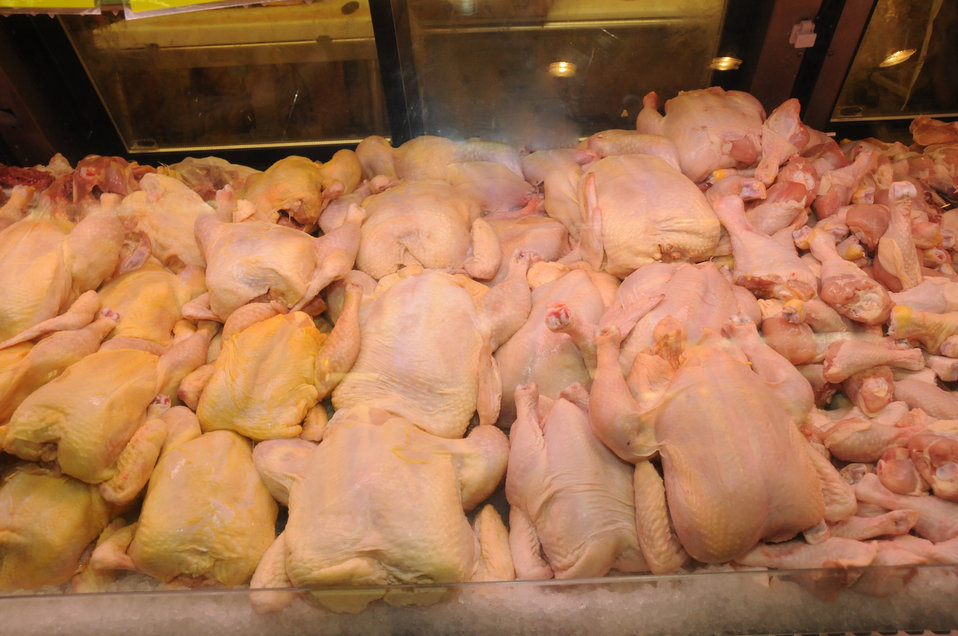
The Reading Terminal Market offers produce fresh from the field to the people of Philadelphia, PA on April 3, 2009. There are Amish specialties, fruits, vegetables, meats, seafood, and poultry. Reading Terminal Market opened for business in 1892 with approximately 78,000 square feet and almost 800 spaces for vendors. The Market was revitalized in the 1990’s and today is still the gastronomic bazaar that its original planners had envisioned. Many of the historic Market stands survived the reconstruction and are once again filled with local produce, fresh eggs, milk, meats, poultry, seafood, handmade crafts, jewelry, and clothing. The Market is home to more than 80 merchants, two of whom are descendants of the original stand holders from a century before.